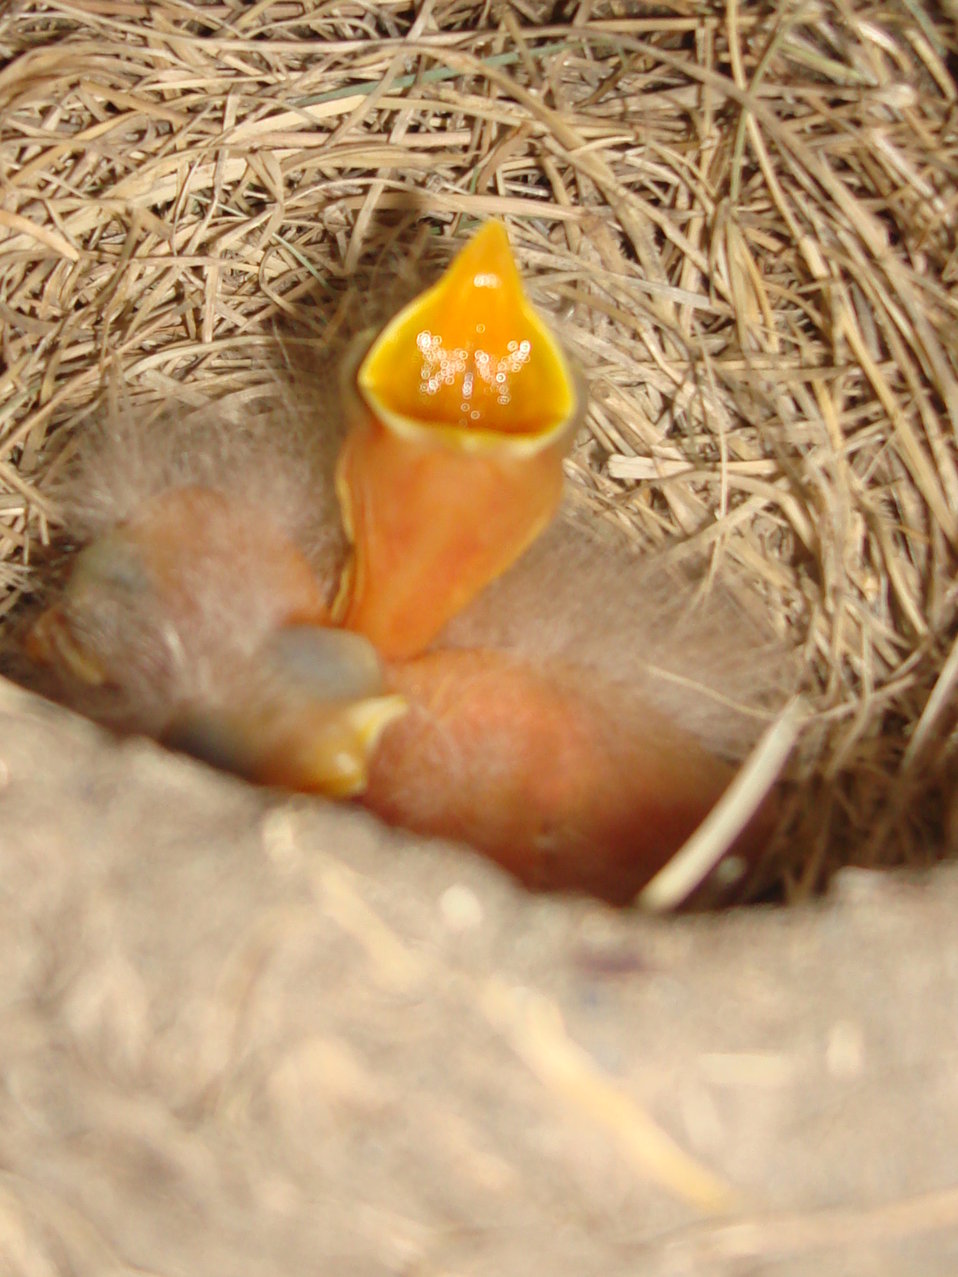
Robin Baby